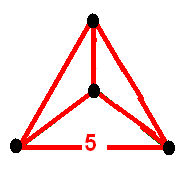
en:120-cell en:vertex figure